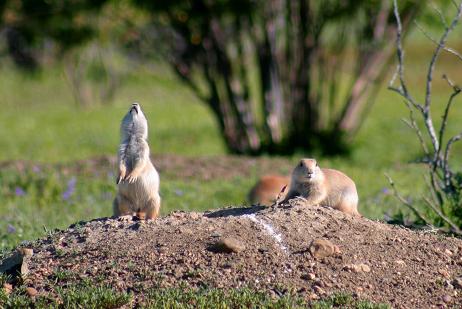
Black-tailed Prairie Dog on CMR NWR

Prairie dogs stay near their burrows and sound a high-pitched alarm bark to warn others of danger.